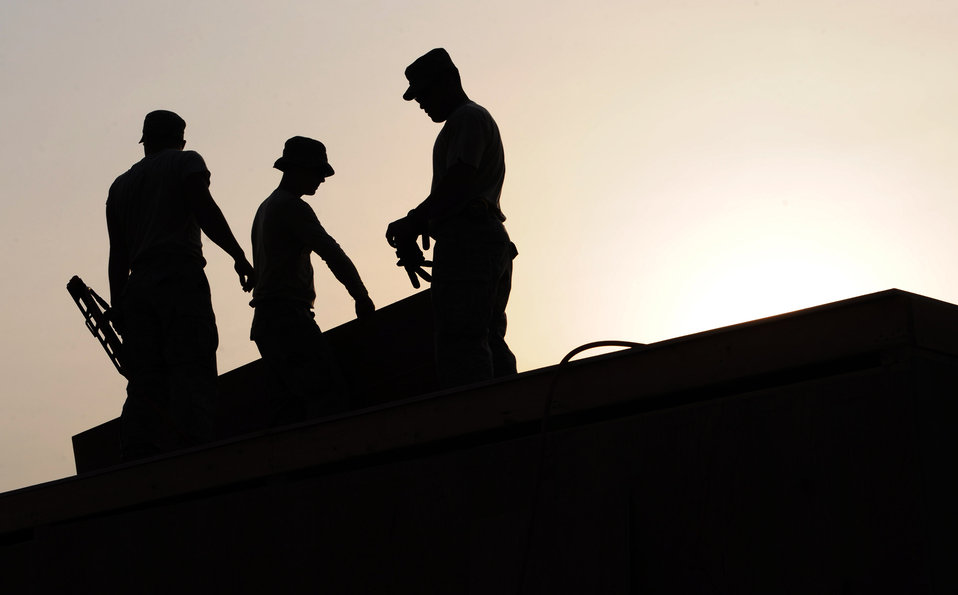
JET Airmen impress Soldiers at FOB Hunter

Joint expeditionary tasking Airmen from the 732nd Expeditionary Civil Engineer Squadron work until sunset to finish building a shower unit for Soldiers deployed to Forward Operating Base Hunter, Iraq, Feb. 8. The JET Airmen worked to complete three shower units for Soldiers deployed here as well as to provide power and heating to 64 tents.